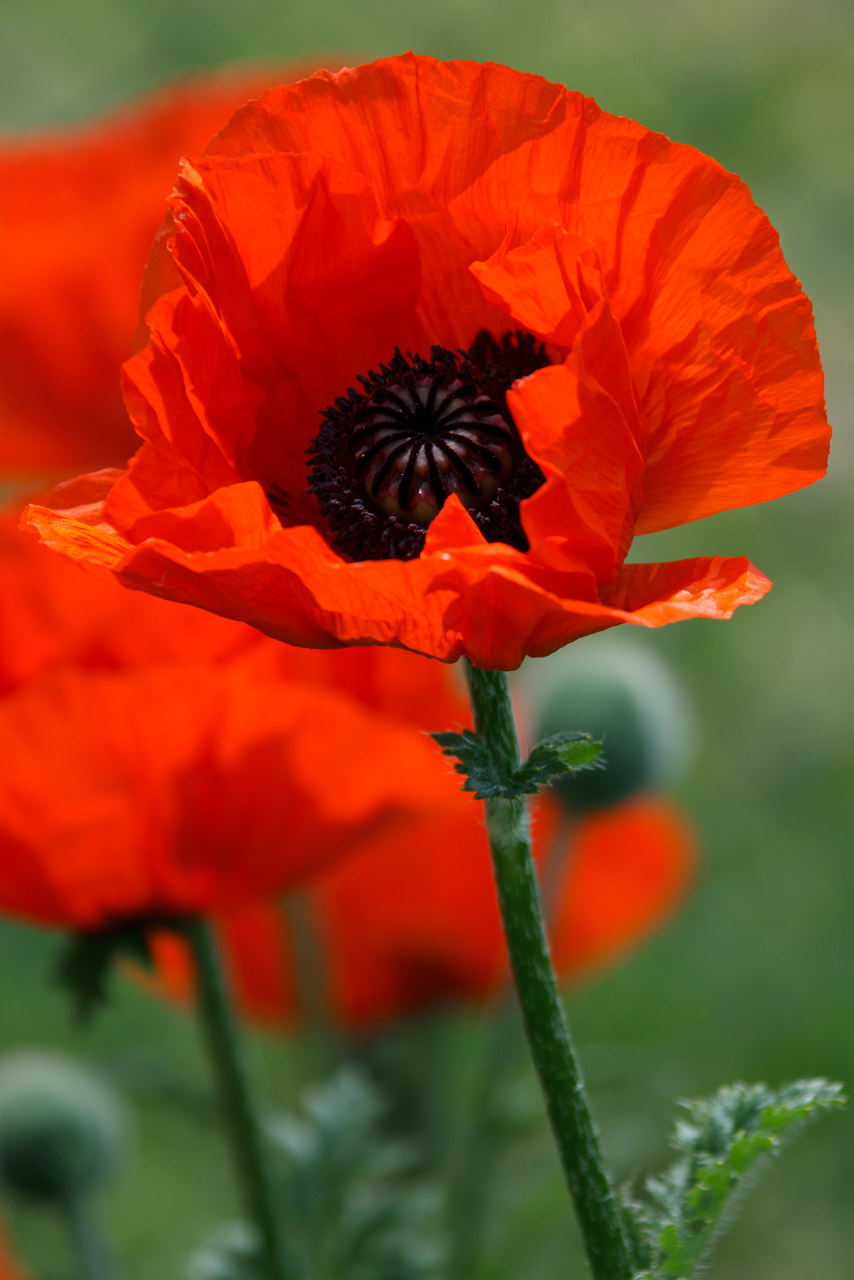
Poppy flower

Macro photo of a poppy flower.